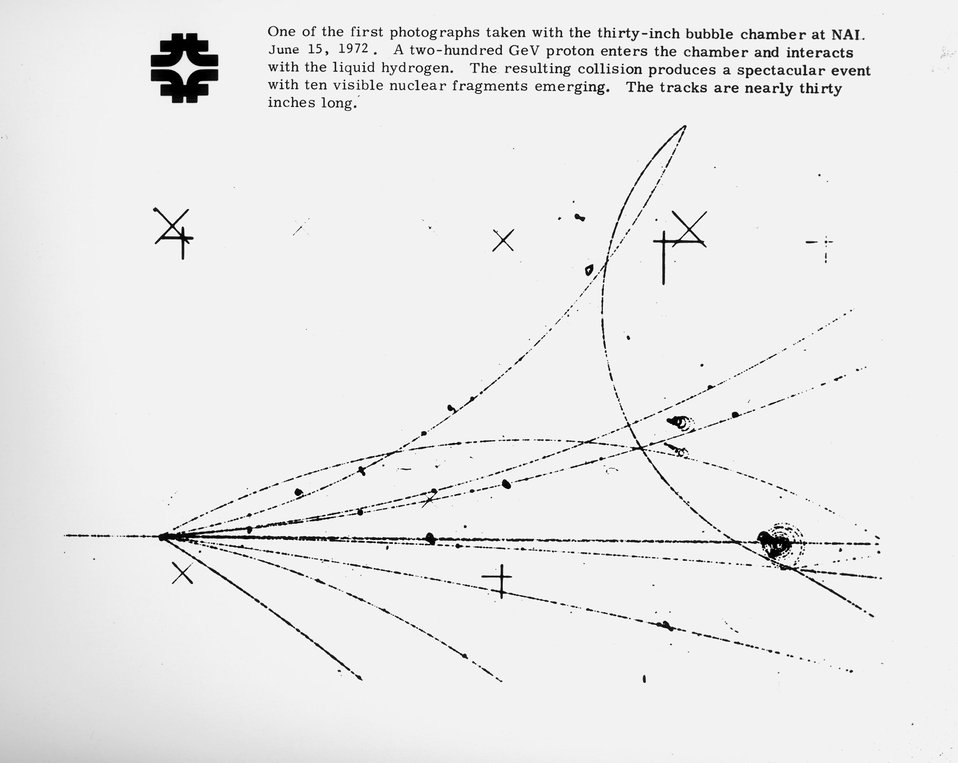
One of the first photographs taken with the thirty-inch bubble chamber, June 15, 1972